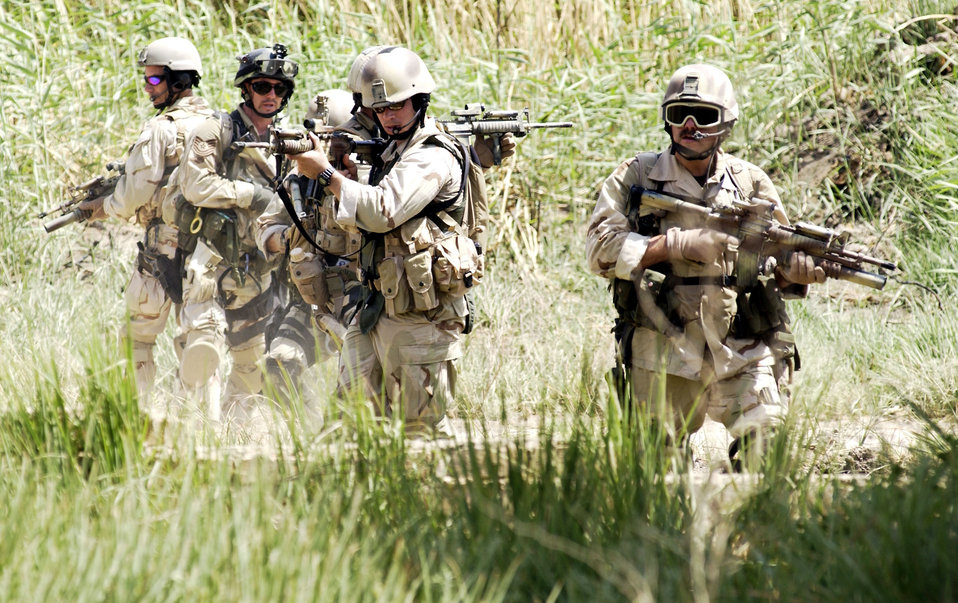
The good guys

OPERATION IRAQI FREEDOM -- A pararescue team conducts an urban ground exercise in Iraq. The team is assigned to Baghdad International Airport.